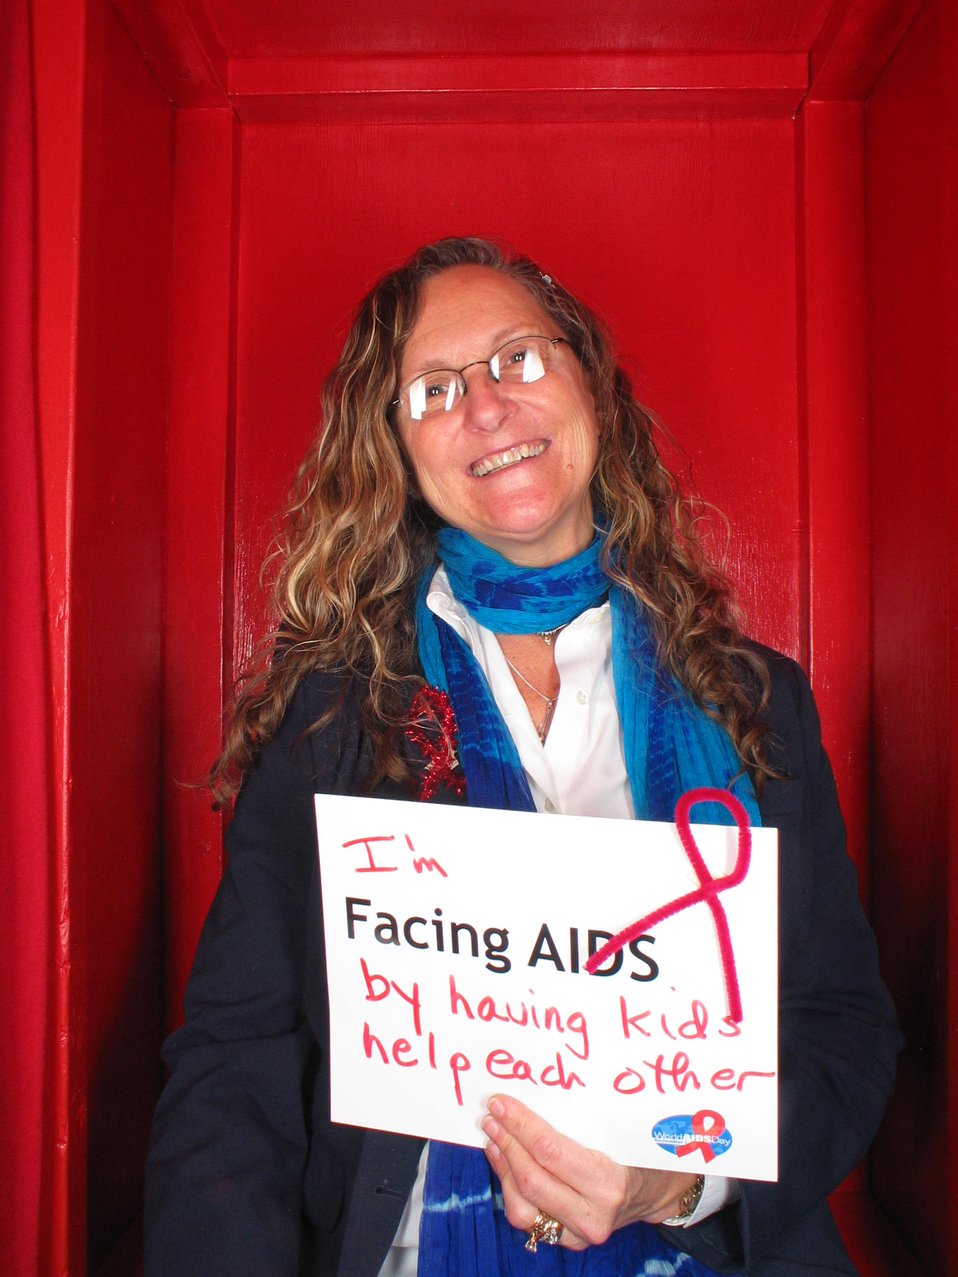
I'm Facing AIDS by having kids help each other.